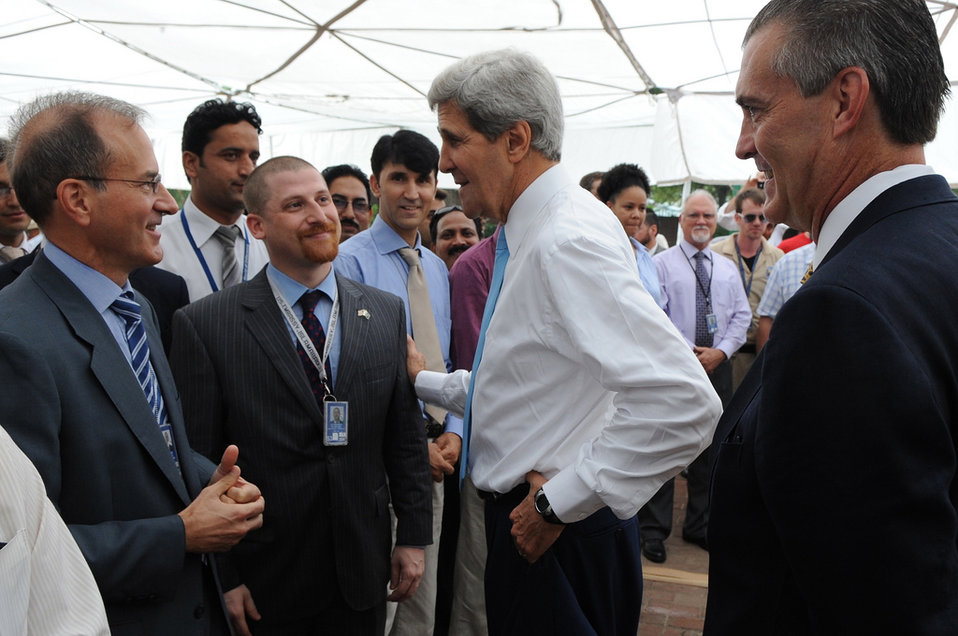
Secretary Kerry Greets Embassy Islamabad Employees

U.S. Secretary of State John Kerry greets staffers at the U.S. Embassy in Islamabad, Pakistan, after addressing them on August 1, 2013.